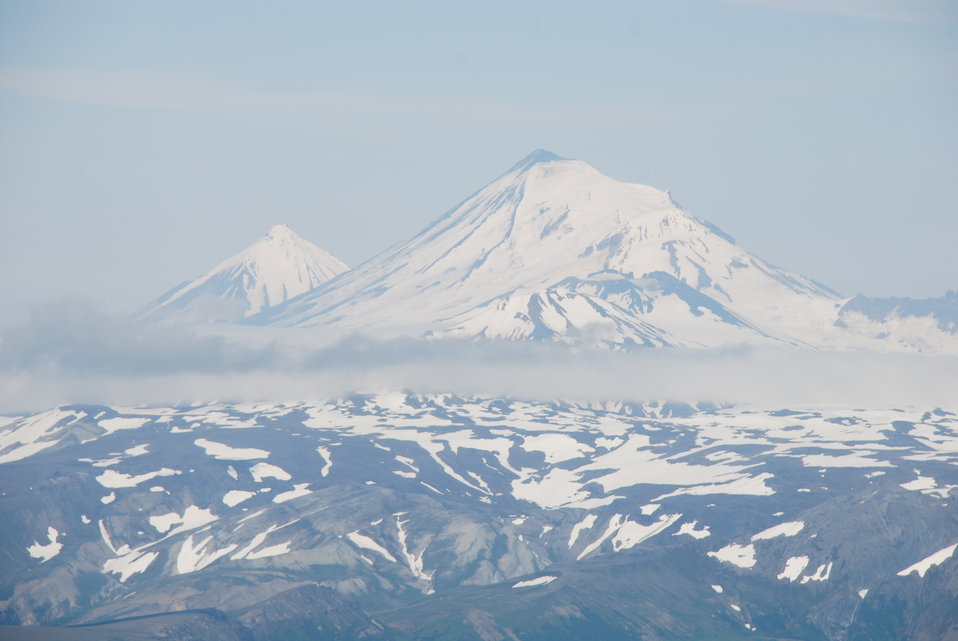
Pavlof SisterandPavlof Volcanoes

Volcanoes of the southern Alaska Peninsula